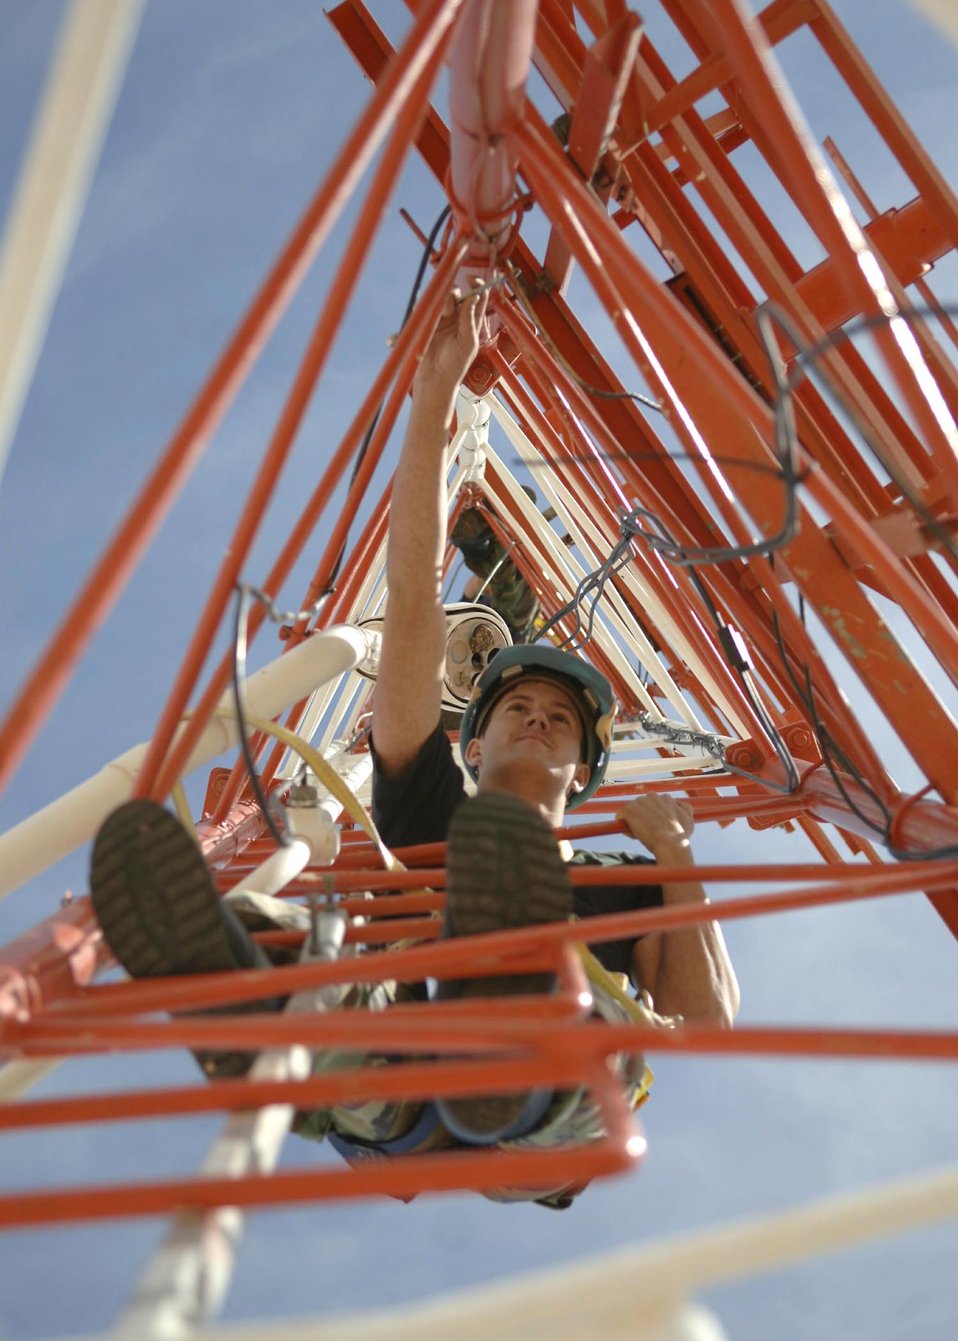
Tower maintenance

Senior Airman Robert Oehmke performs maintenance on the Glidescope antenna tower Wednesday, March 29, 2006, at Davis-Monthan Air Force Base, Ariz. The antenna connects a very high frequency radio with the flight check office, which verifies calibration and alignment of airfield navigational equipment. Airman Oehmke is an airfield systems journeyman with the 355th Communications Squadron.